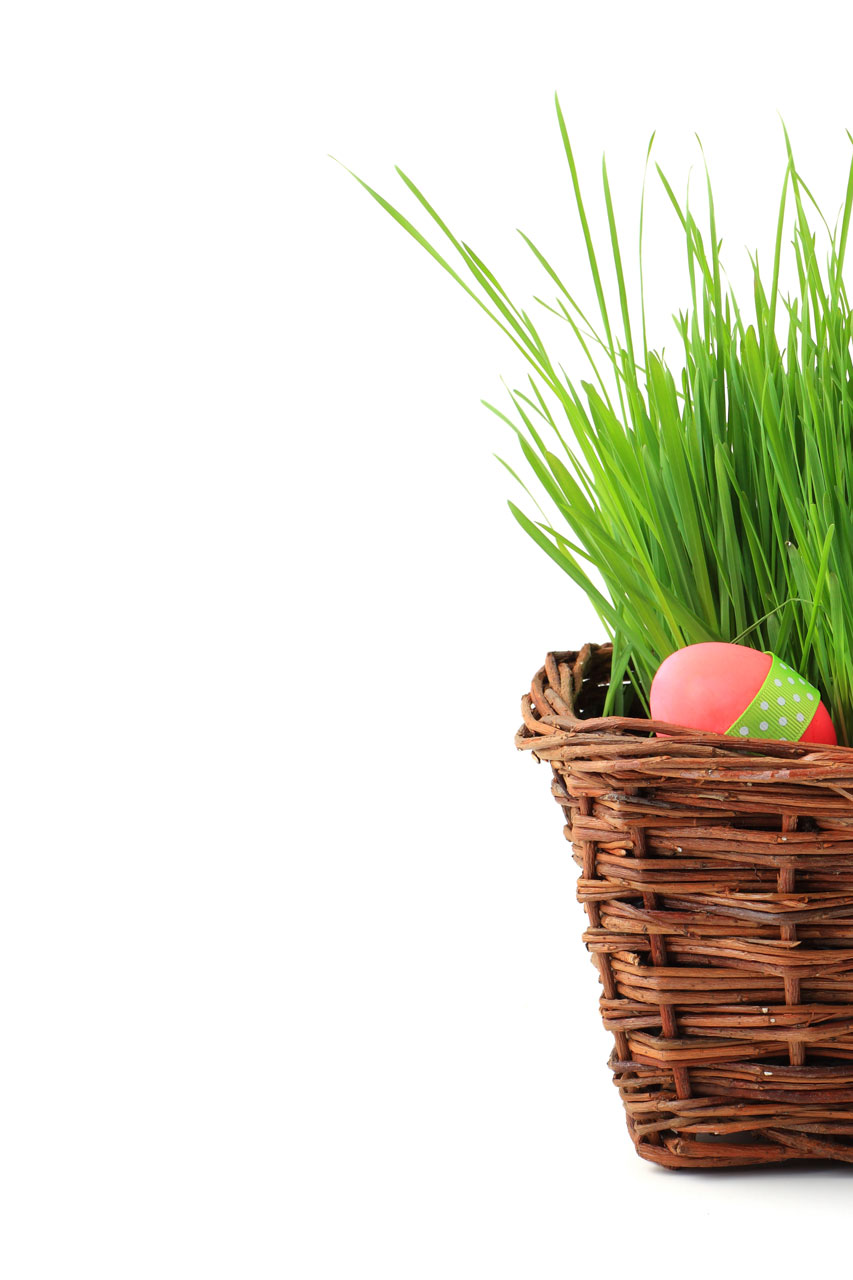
Easter concept

Basket with fresh grass and easter egg isolated on white background.